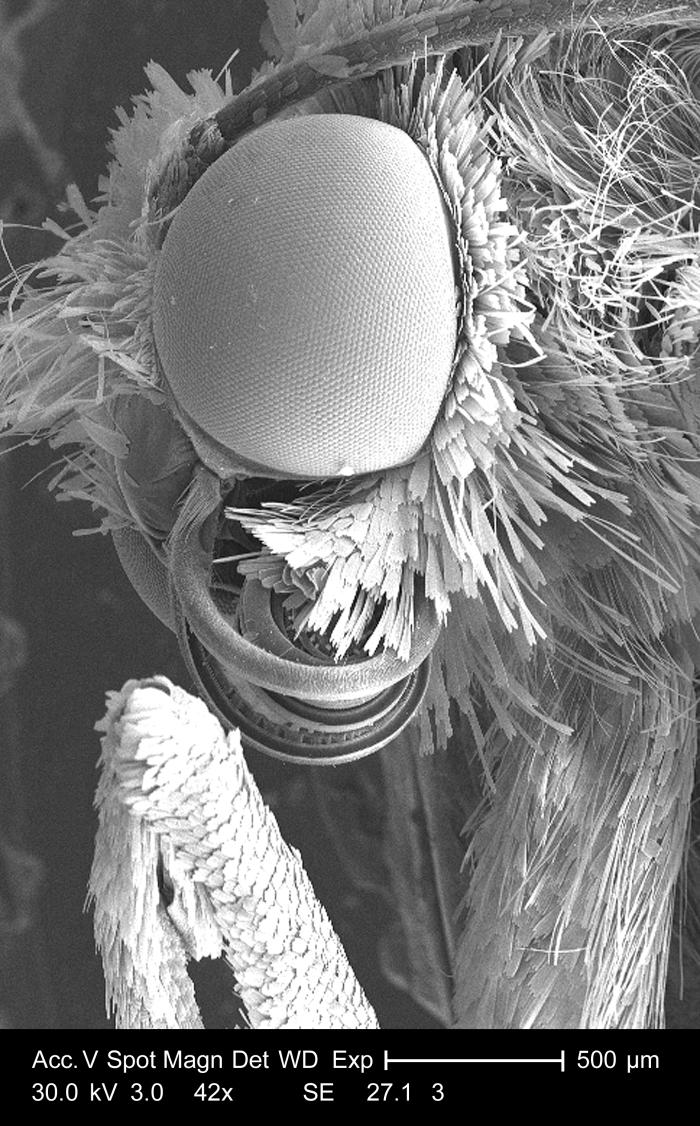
At a very low magnification of only 42x, this scanning electron micrograph (SEM) depicted the morphologic details found on the head, and leg joint of an unidentified insect, discovered deceased on the grounds of the Decatur, Georgia suburbs. Visible in this particular view, was the insect's compound eye, structural aspects of its mouth, or proboscis, its leg, which was covered by a layer of scales, and a vast amount of 'hairlike' setae and elongated scales. In order to fully appreciate the structural hierarchy of the compound eye, see PHIL 7875 (this image), 7877, 7878, 7879, 7880, and 7881, for successively greater magnifications of this visual structure.